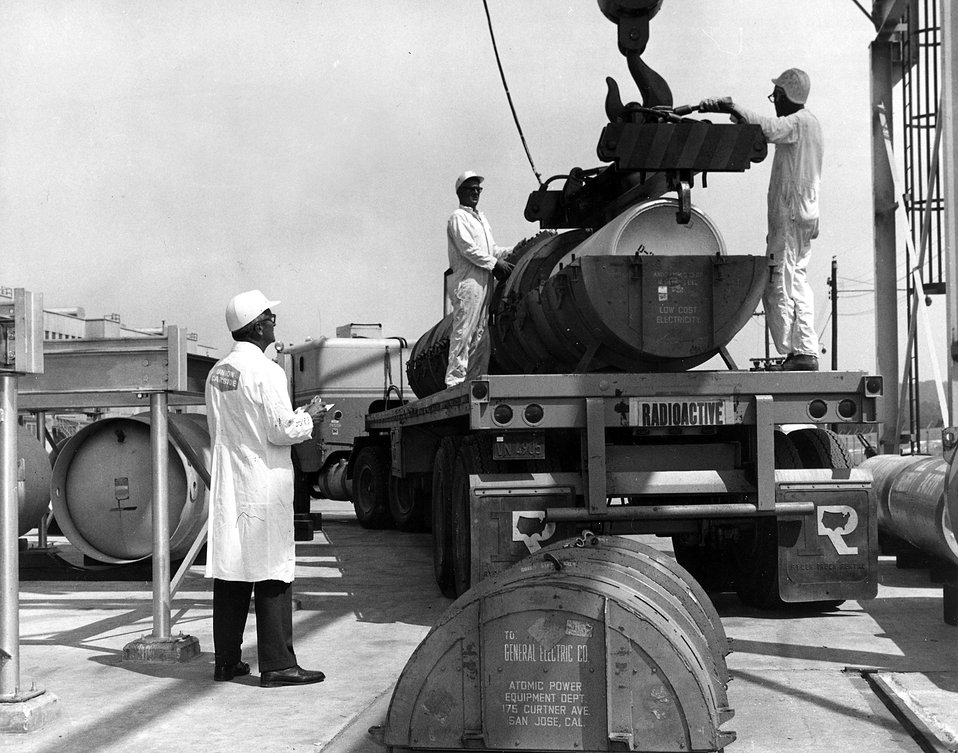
Customer Produce Cylinder being loaded into Protective Package at the Oak Ridge Gaseous Diffusion Plant Toll Enrichment Facility in Oak Ridge, Tenn. Circa 1972.